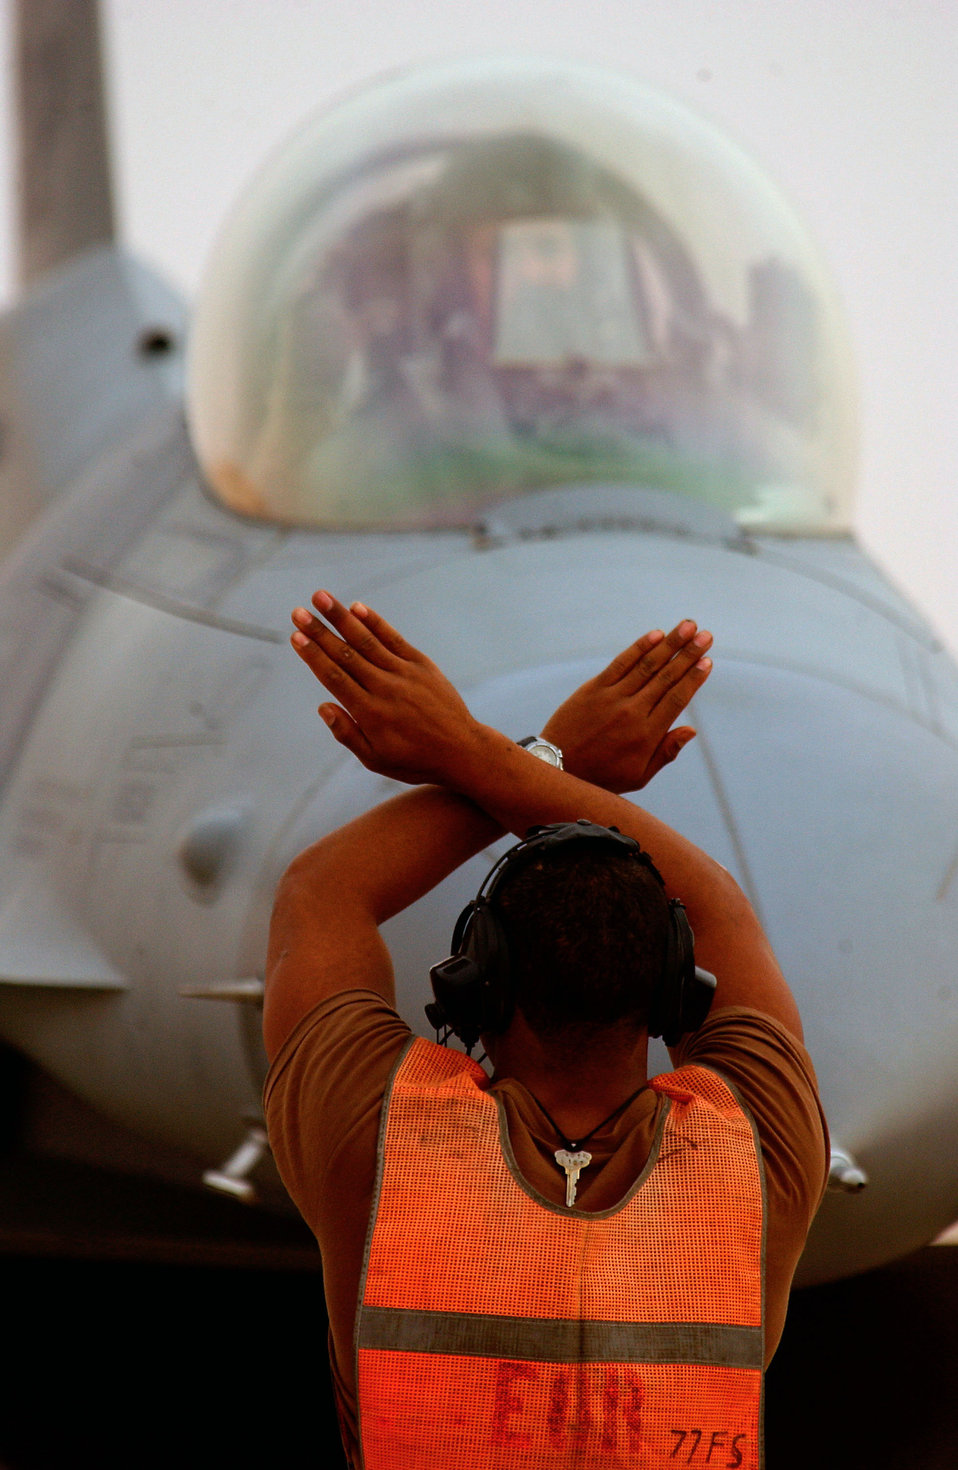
Lyles

OPERATION IRAQI FREEDOM -- Airman 1st Class Desmond Lyles, a crew chief deployed from the 77th Fighter Squadron, Shaw Air Force Base, SC, to the 363rd Expeditionary Maintenance Squadron, communicates with an F-16CJ pilot while co-workers pull weapon pins on the aircraft prior to taking off for a mission.